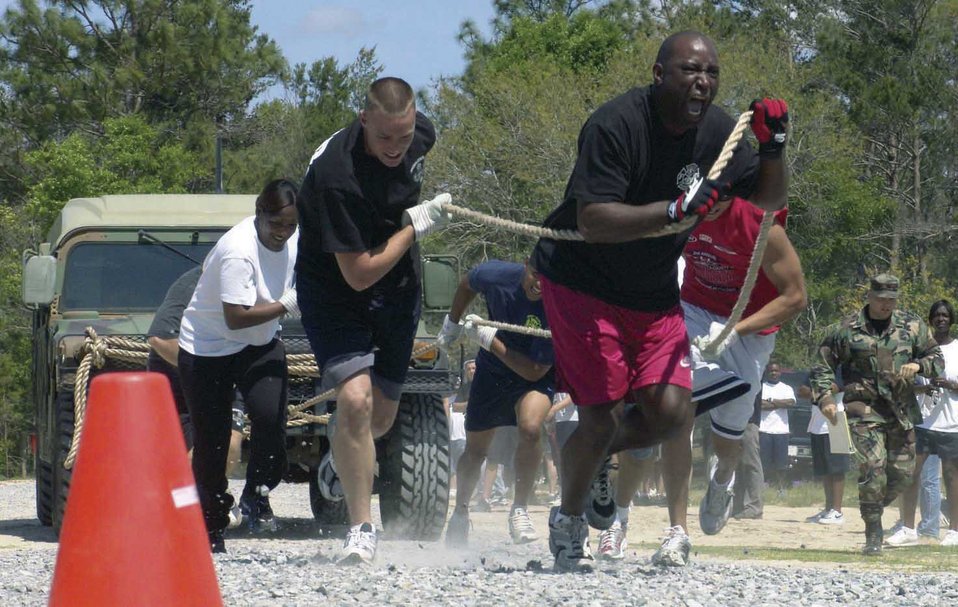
Warrior Day

EGLIN AIR FORCE BASE, Fla. -- Master Sgt. Jarvis Amos leads his team as they pull a Humvee toward the finish line during a Warrior Day event. He is assigned to the 96th Civil Engineer Group's fire department.